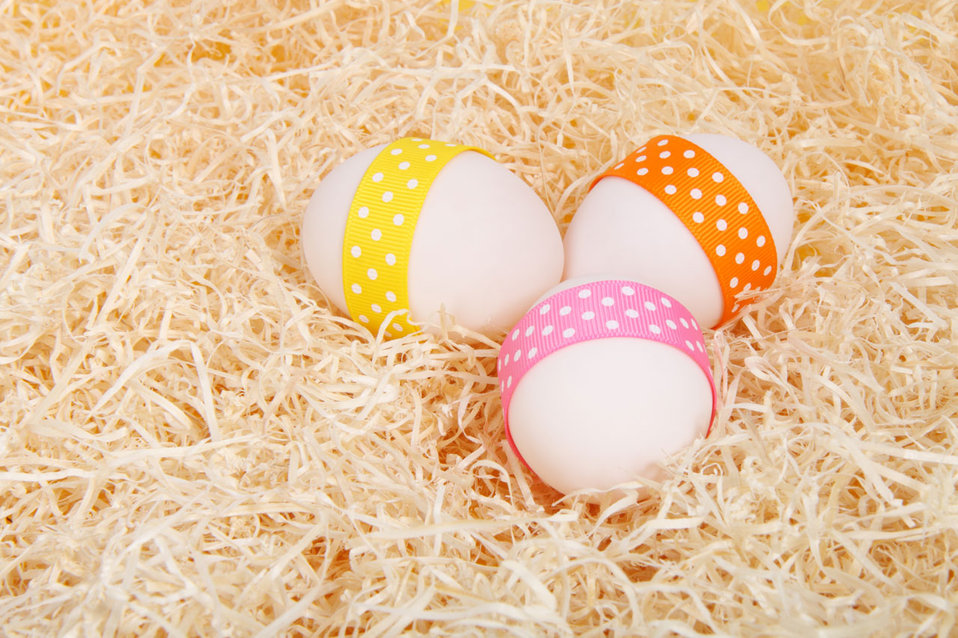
Easter eggs on straw

Three easter eggs on straw.